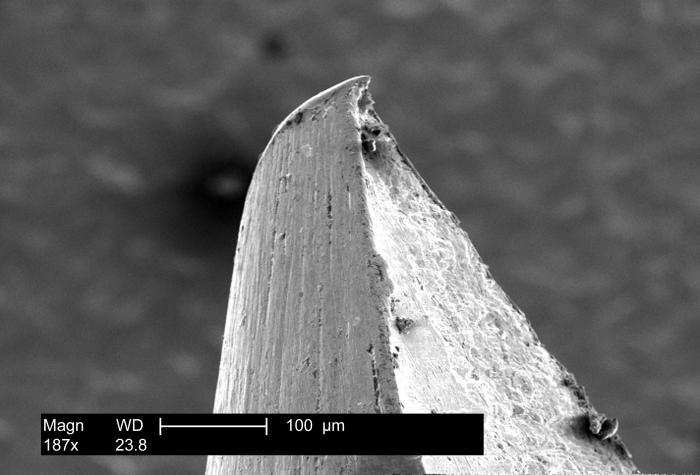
This scanning electron micrograph (SEM) reveals the roughened surface at the tip of one of the prongs of a 'bifurcated' smallpox vaccination needle.